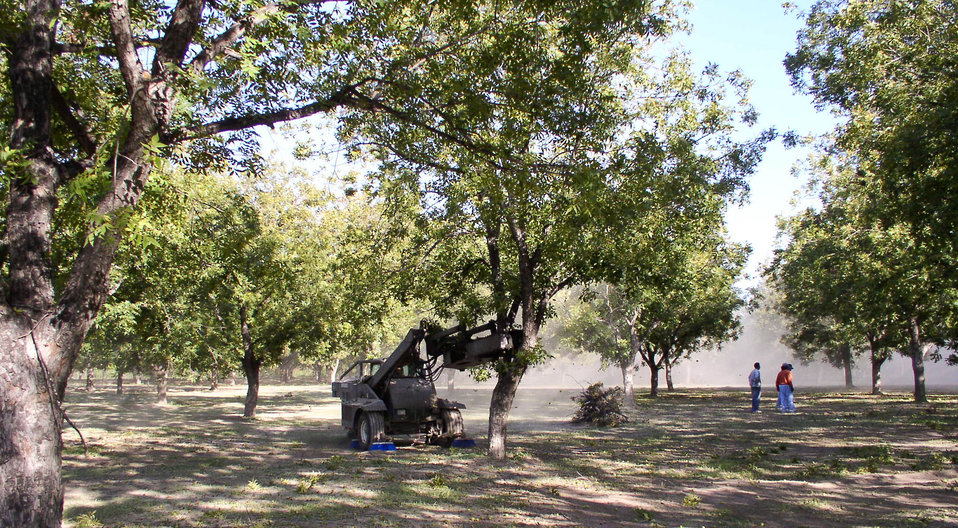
Harvest time at Arrowhead Farms of Crystal City, TX, on Wednesday, October 12, 2011, means powered shakers go from tree to tree shaking pecans on the 719-acre farm which features some orchards (seen here) that are equipped with underground micro irrigation that feeds water to the roots of 4,380 pecan trees on 146 acres. Mr. Mohammad said, “USDA (U.S. Department of Agriculture) was essential to my business and trees surviving the recent exceptional drought. The trees were stress free thanks to underground micro-irrigation. This is essential to the future growth of Texas agriculture and good for America.” U.S. Department of Agriculture’s (USDA) Environmental Quality Initiative Program (EQIP) awarded Mr. Mohammad a $130,000 grant in 2008. He provided $26,000 for the balance of the $156,000 total cost to install a 146-acre underground micro-irrigation for 4,380 trees.